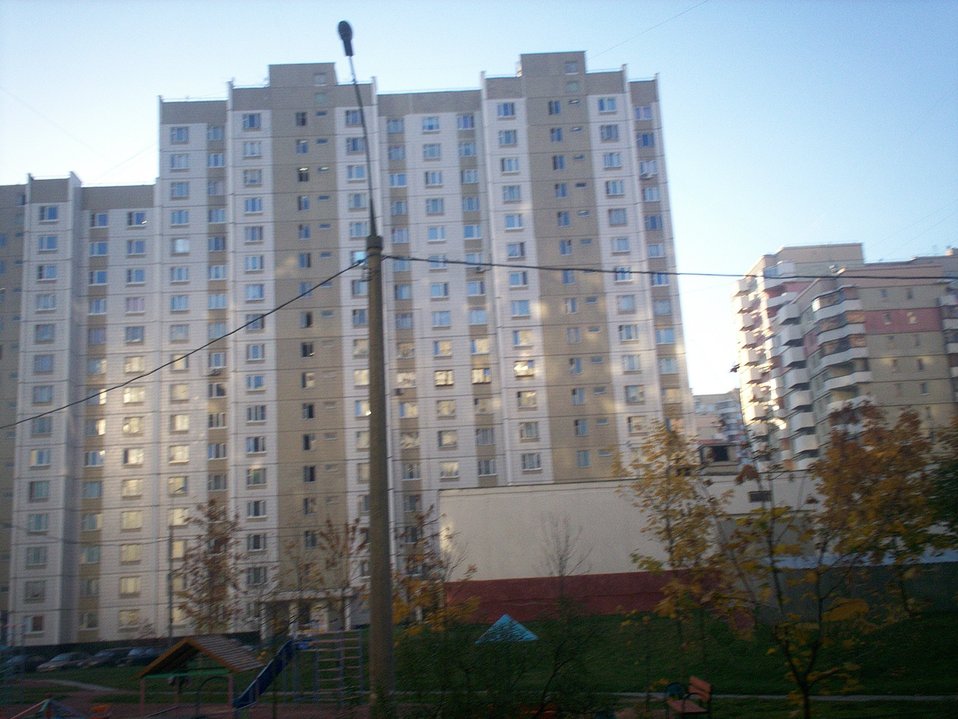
Русский: Москва, 12-й микрорайон Митина.